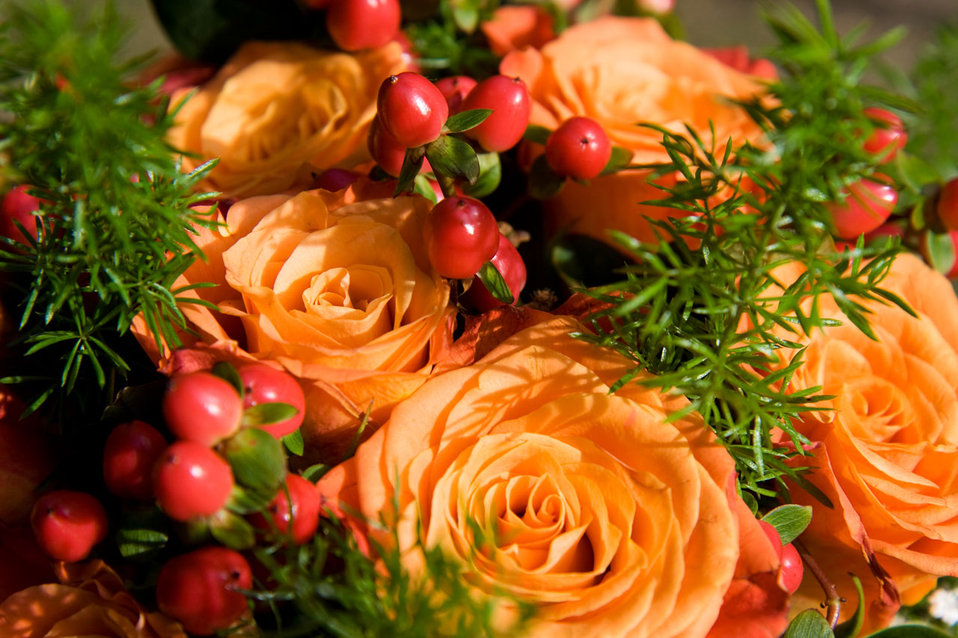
Wedding bouquet

Close up of a wedding bouquet.